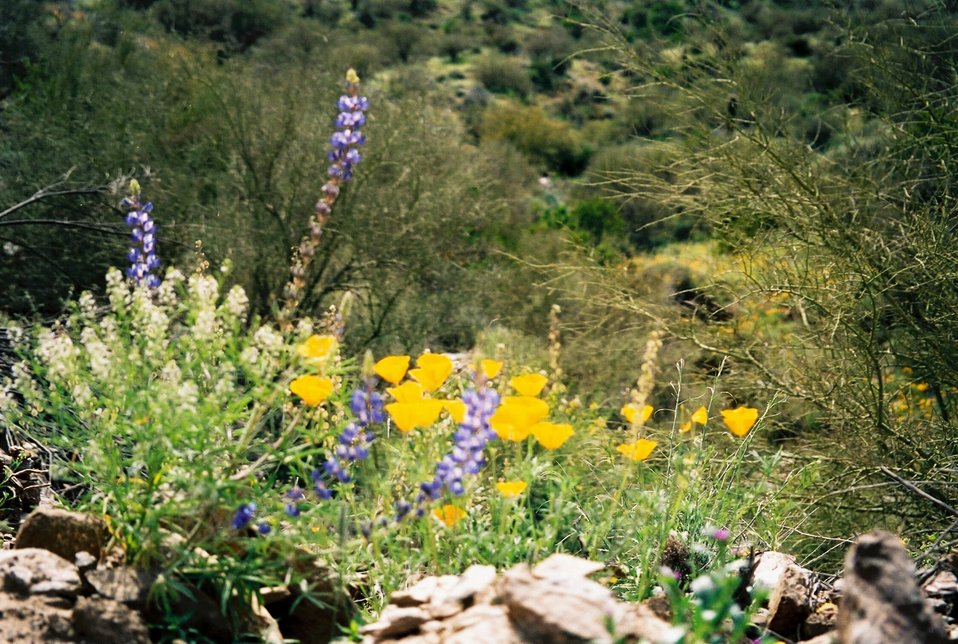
Many different kinds of beautiful wildflowers grow in the Agua Fria National Monument.